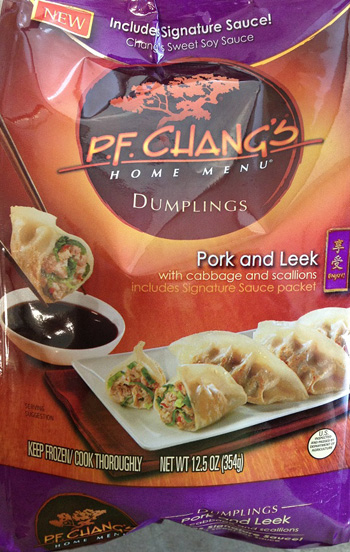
RECALLED – P.F. Chang's

September 18, 2013 – Product Recall – Specific Lots of P.F. Chang's Home Menu Pork and Leek Dumpling Frozen Appetizers Recalled Due to Undeclared Allergen
.